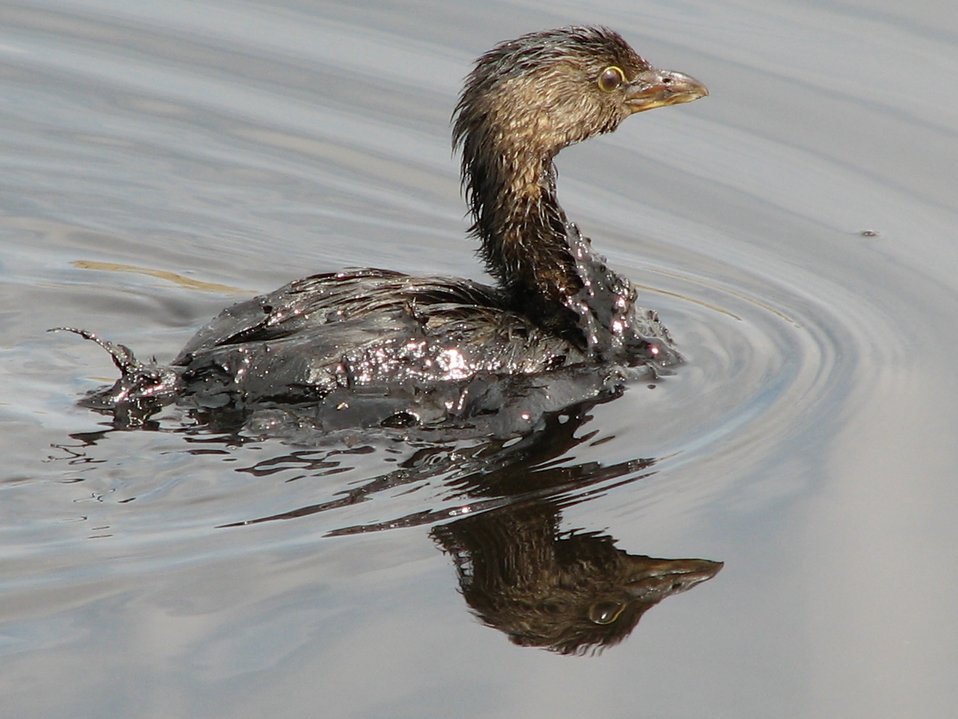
Oil Covered Pied-billed Grebe

Pied-billed grebe on an oil-covered evaporation pond at a commercial oilfield wastewater disposal facility. An estimated 500,000-1,000,000 migratory birds die each year in oilfield production skim pits and oil-covered evaporation ponds.